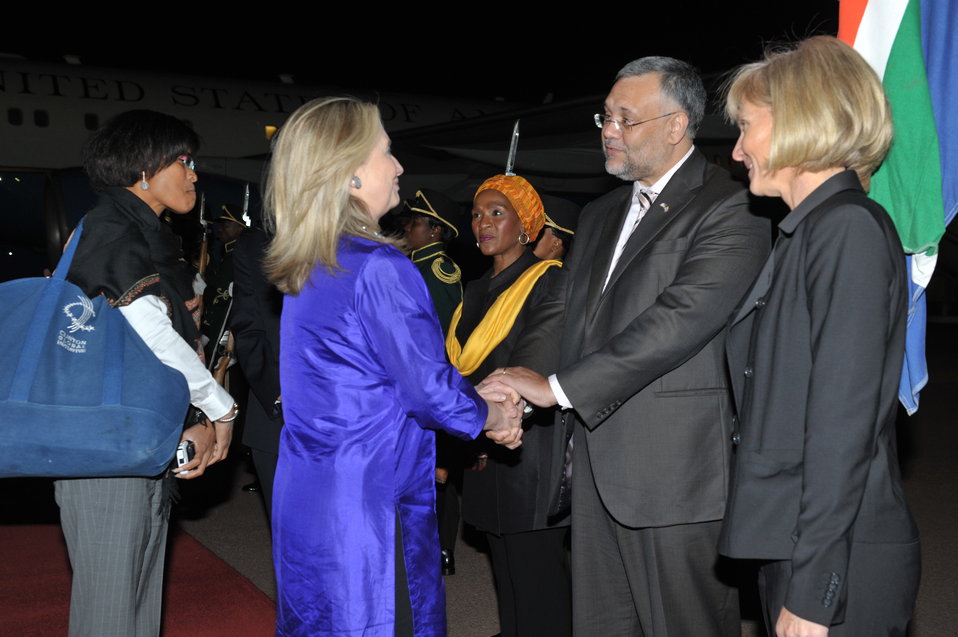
Secretary Clinton Is Greeted By Ambassador Rasool

U.S. Secretary of State Hillary Rodham Clinton is greeted by South African Ambassador to the United States Ebrahim Rasool upon her arrival to Johannesburg, South Africa, on August 6, 2012.